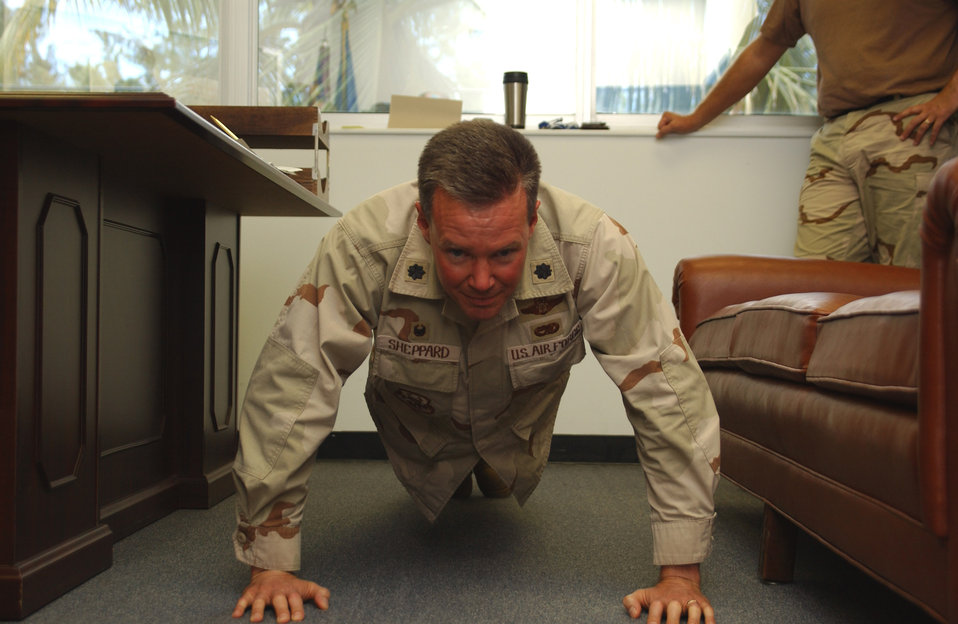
SOUTHWEST ASIA -- Lt. Col. Jeff Sheppard knocks out one of more than 16,000 push-ups he has done during his rotation here at a forward-deployed location. He is shooting for 17,000. He is the former 28th Expeditionary Air Refueling Squadron commander.